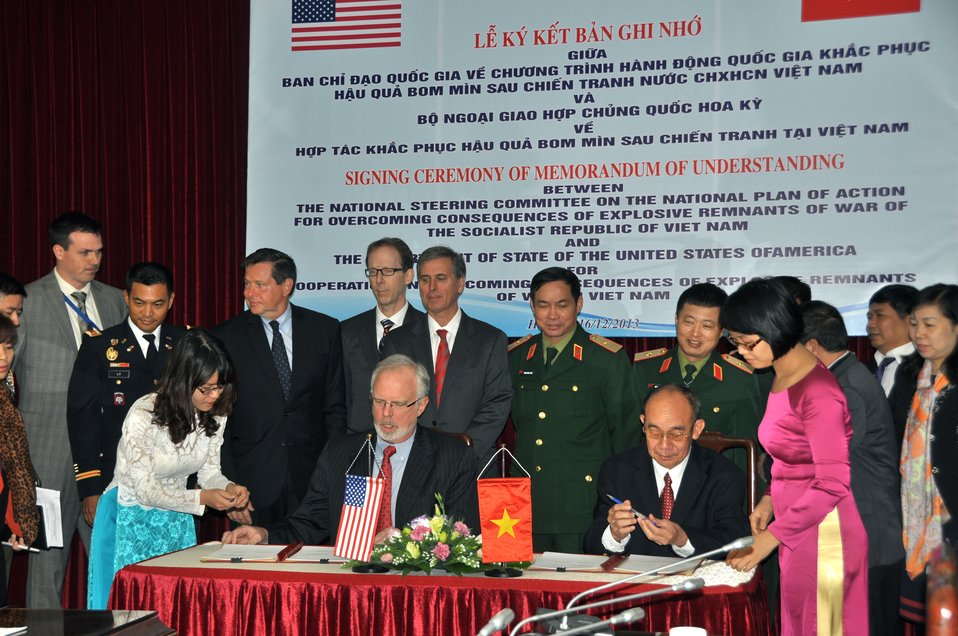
U.S. Embassador to Vietnam David Shear (left) and Mr. Bui Hong Linh, Vietnam’s Vice-Minister of the Ministry of Labor, Invalids and Social Affairs (MOLISA) and Committee 504 Vice-Chairman, sign the MoU.

Hanoi, December 16, 2013.